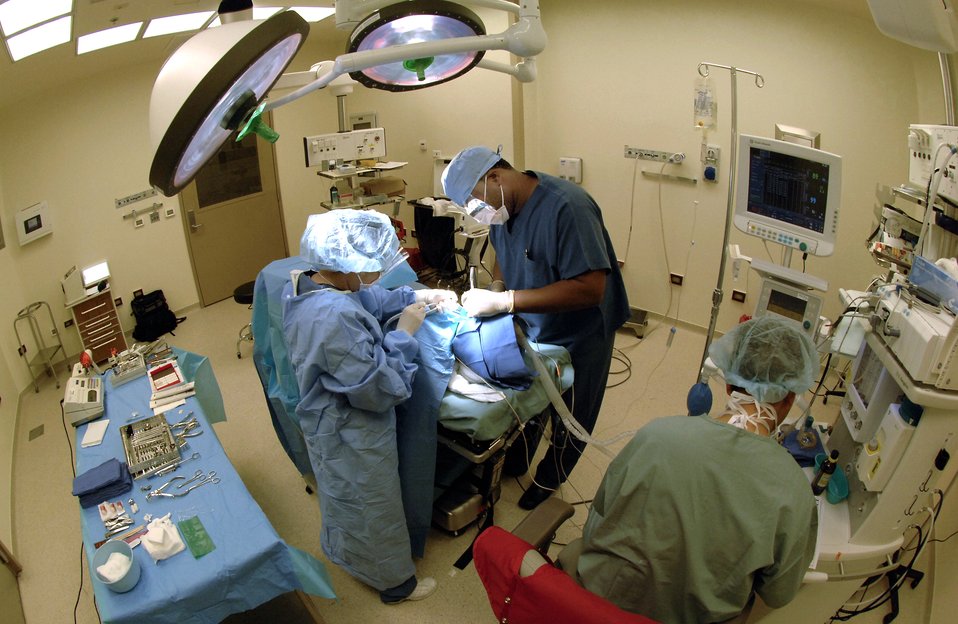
Open wide

Senior Airman Sarai Gapetz, and Capt. Corbet Ellison perform a dental rehabilitation surgery Jan. 29 at Aviano Air Base, Italy. Airman Gapetz is a dental technician and Captain Ellison is a pediatric dentist, and both are assigned to the 31st Dental Squadron. The 31st DS provides services for more than 10,000 members and their families.